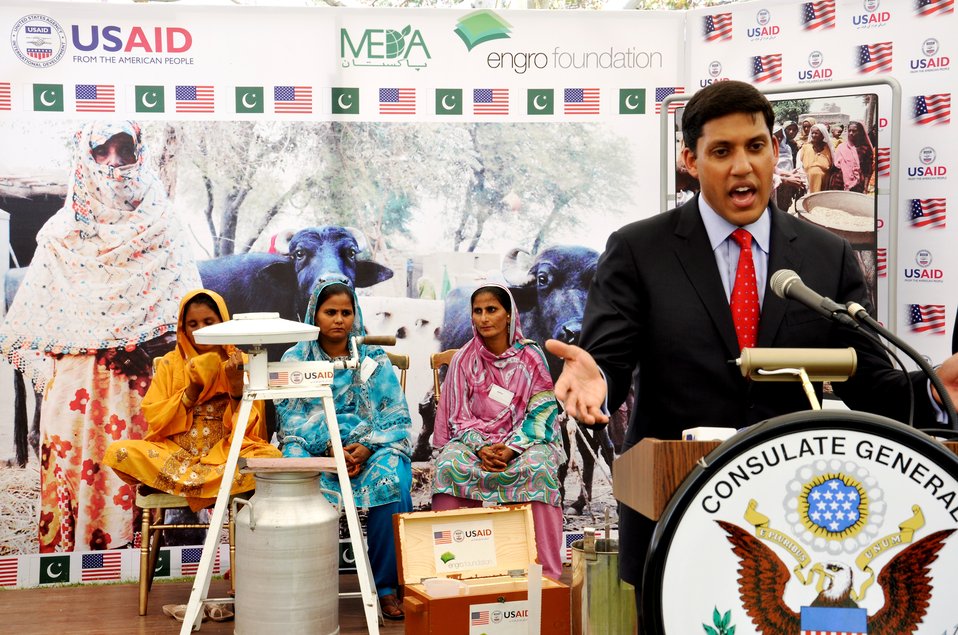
Dr. Rajiv Shah while adressing the media